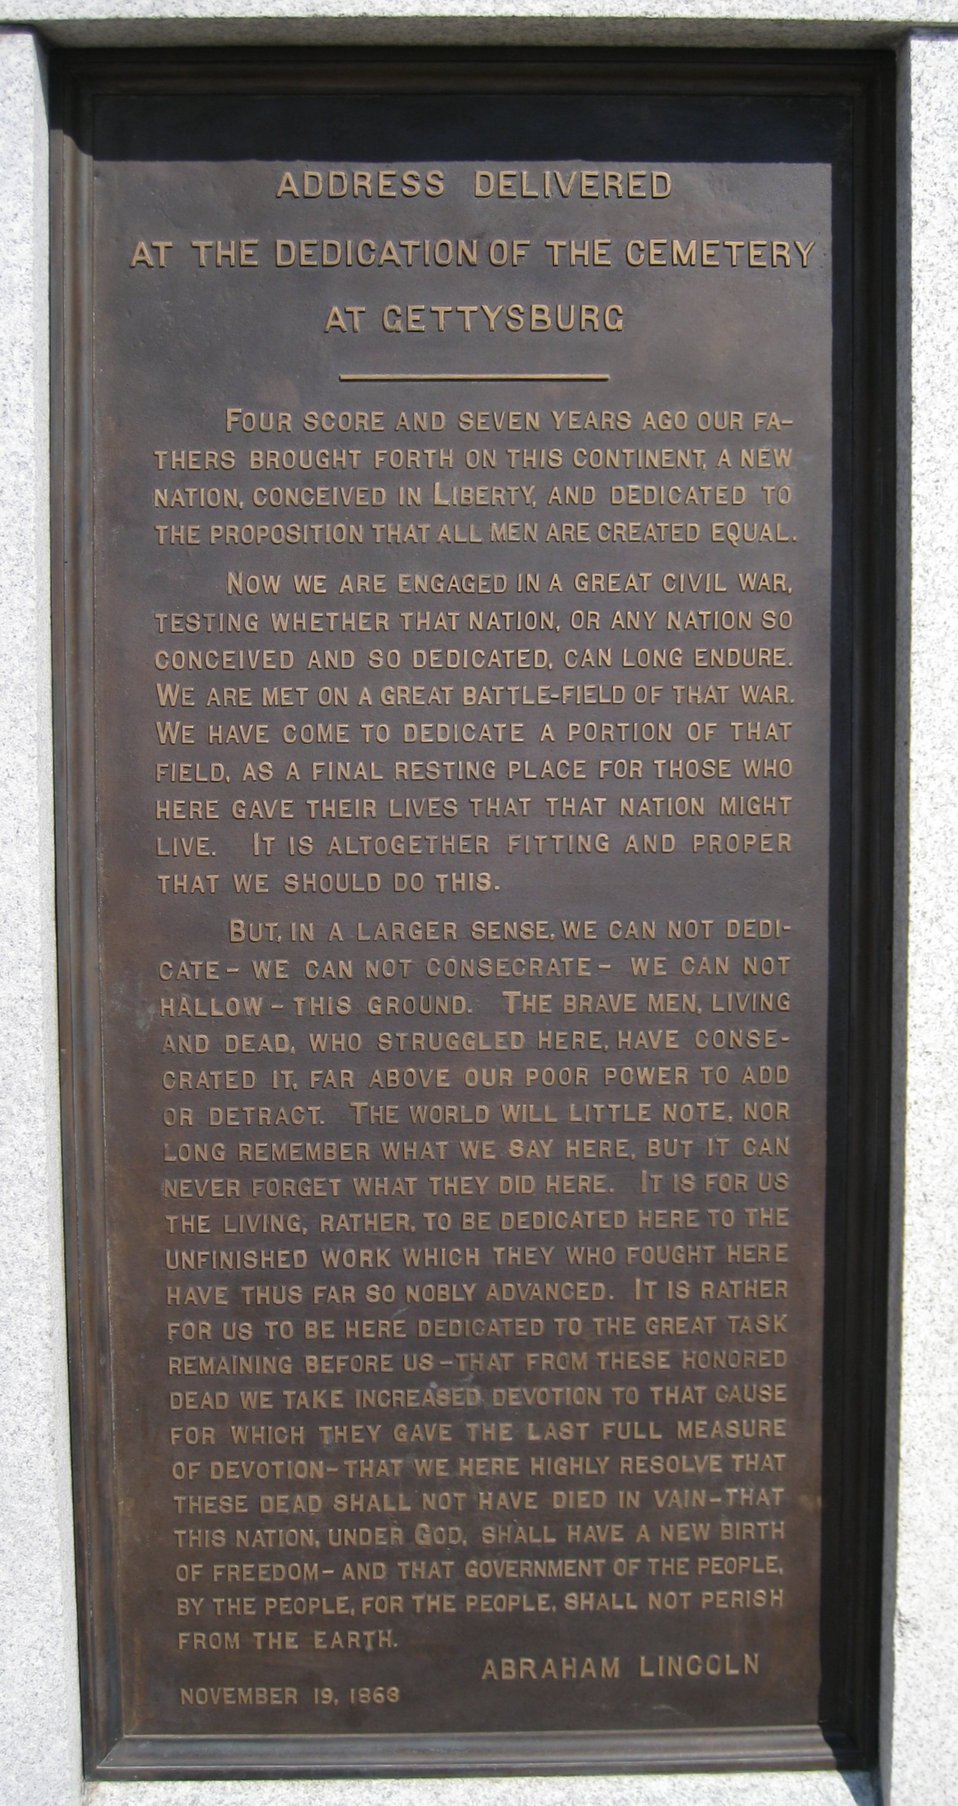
The Gettysburg Address, on a plaque on the battlefield at Gettysburg.